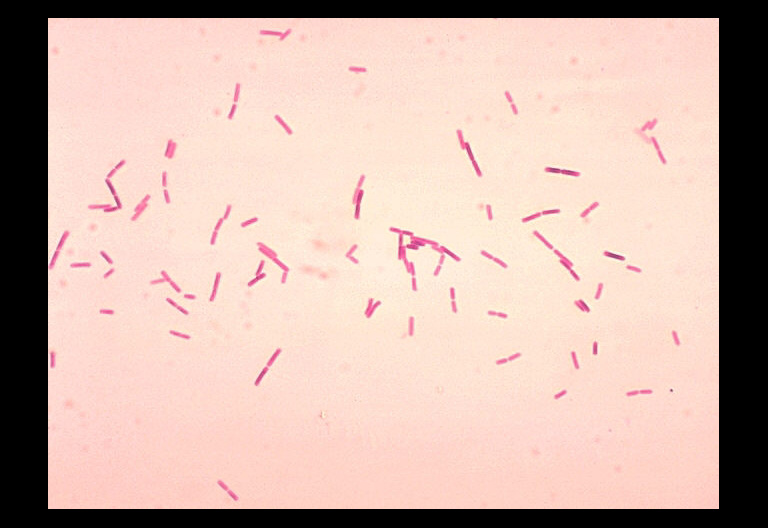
Bacillus firmus. Gram stain.